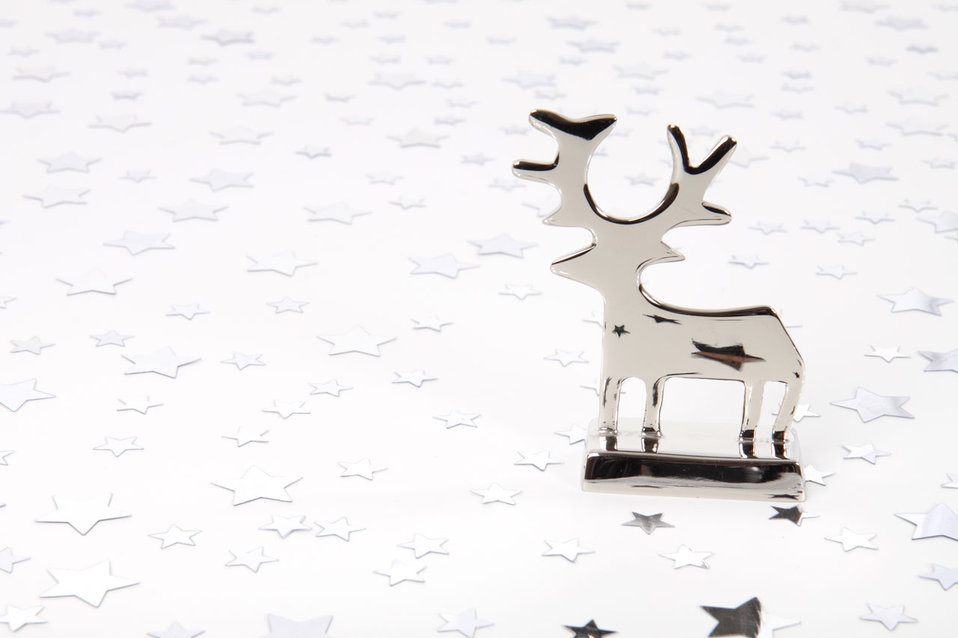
Reindeer and stars

Reindeer with stars on floor.